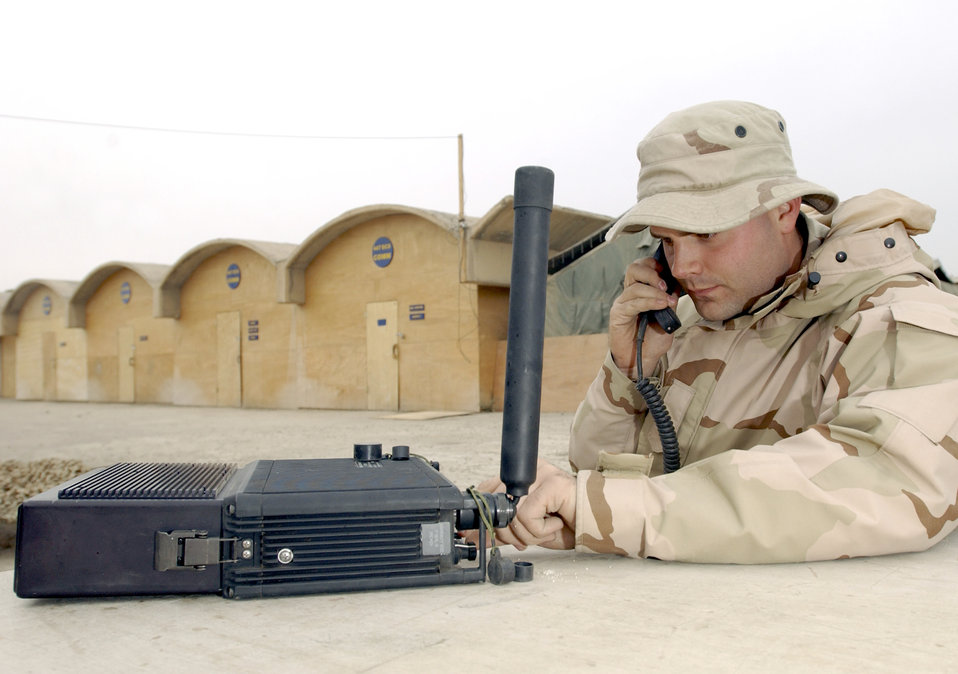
Iraqi Freedom

BAGHDAD INTERNATIONAL AIRPORT, Iraq -- Senior Airman Trent Lundell listens for a satellite signal here Jan. 4. Lundell is a satellite communications technician assigned to the 447th Expeditionary Communications Squadron.